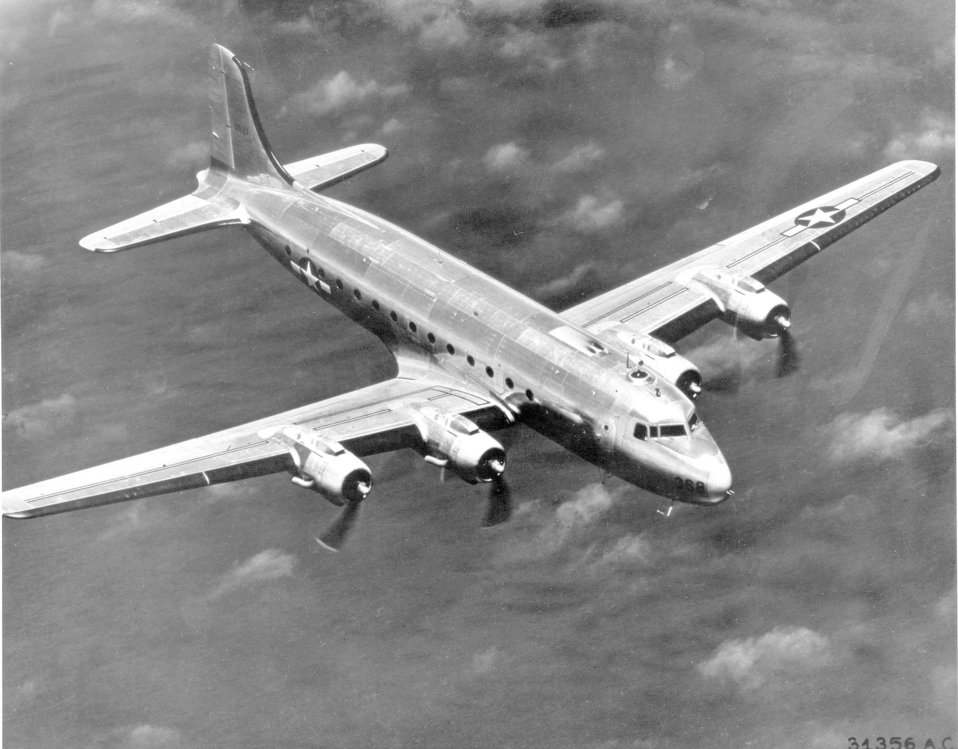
Douglas C-54 Skymaster

1940's -- A special C-54C, nicknamed the